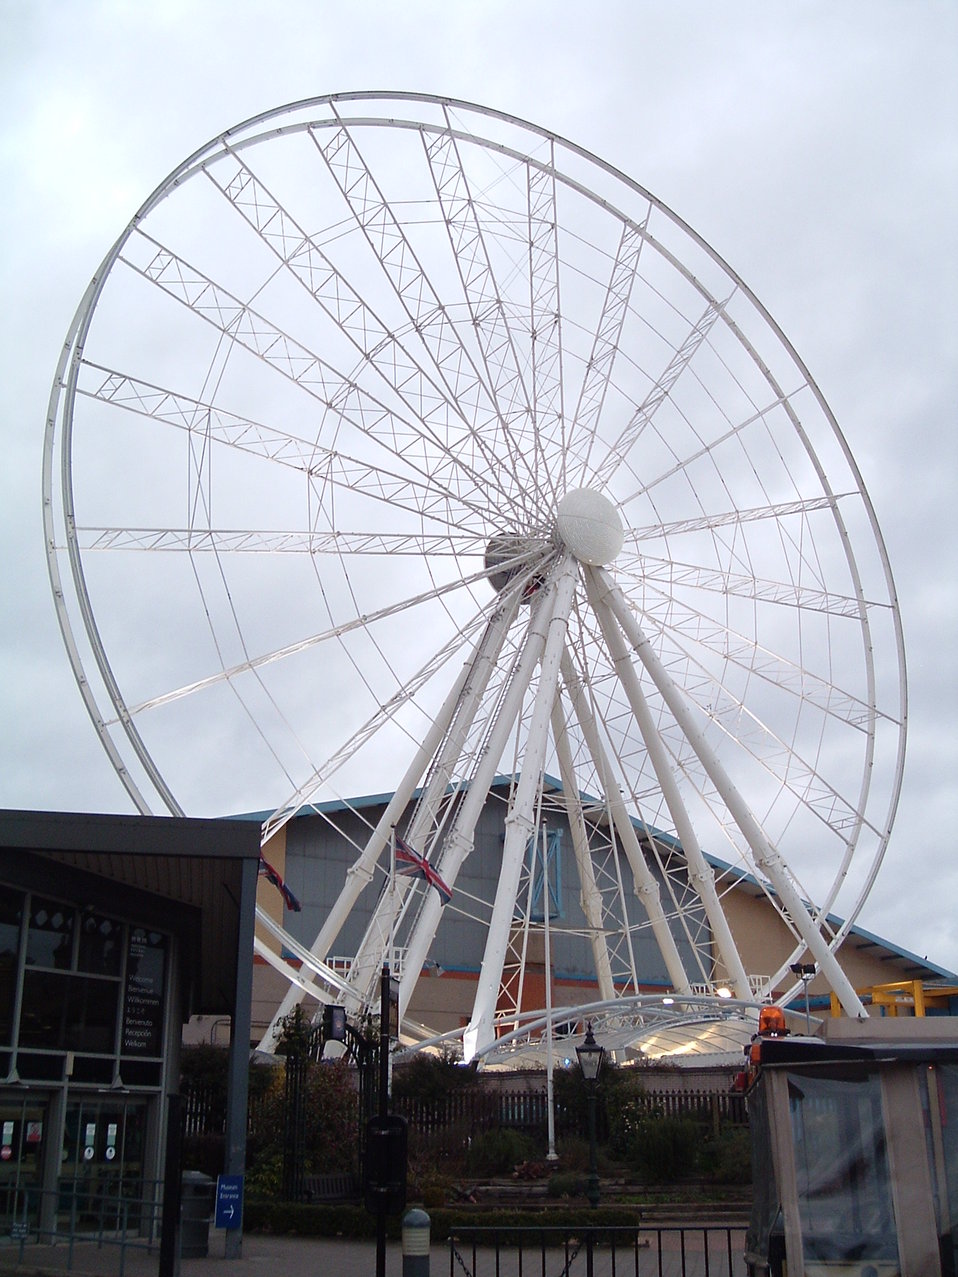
A view of the south side of the 54 metre high Yorkshire Wheel, that was installed at the National Railway Museum in York. It was sited 53°57′35.81″N 1°5′44.42″W / 53.9599472°N 1.0956722°W / 53.9599472; -1.0956722 next to and in line with the southern wall of the museum's Great Hall. Construction started in March 2006 (pictured here before the pods were attached) and the wheel operated from 12 April 2006 until 2 November 2008, being dismantled shortly afterwards. The view here is from the turning circle outside the museum's City Entrance (the glass building). Bottom right is the back end of the museum's trackless train that runs from here to the city centre.